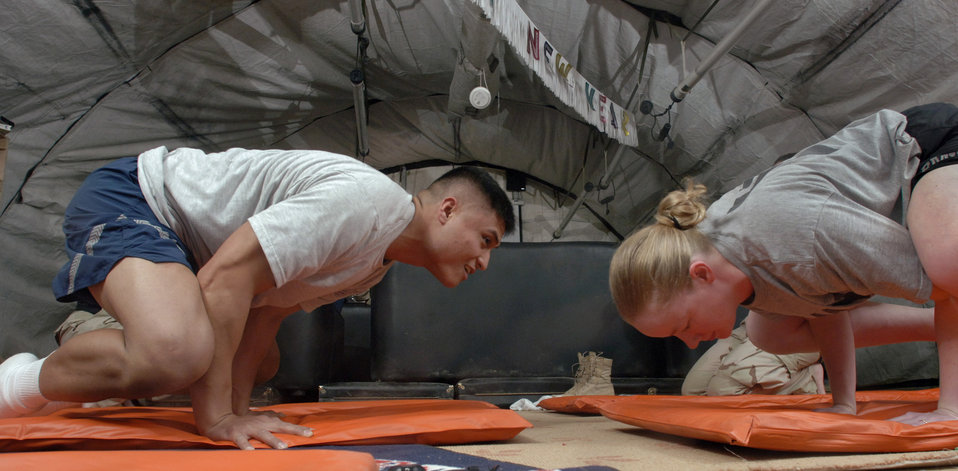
Yoga health

BALAD AIR BASE, Iraq (AFPN) -- Staff Sgt. Joseph Jalkennen and Army Capt. Amy Hadsall practice one of several challenging yoga postures during a class held at the Air Force Theater Hospital here.